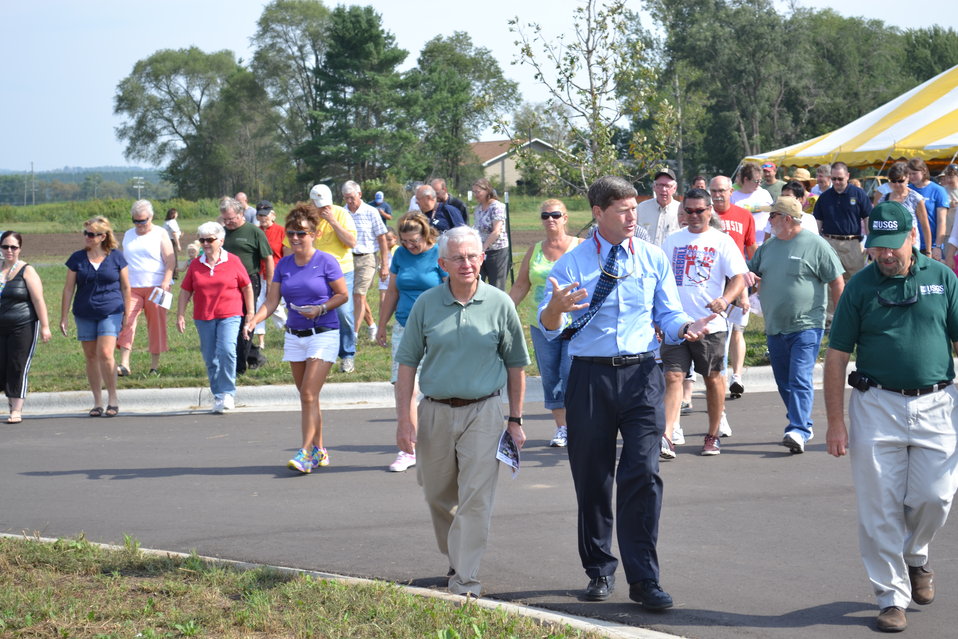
Congressman Ron Kind